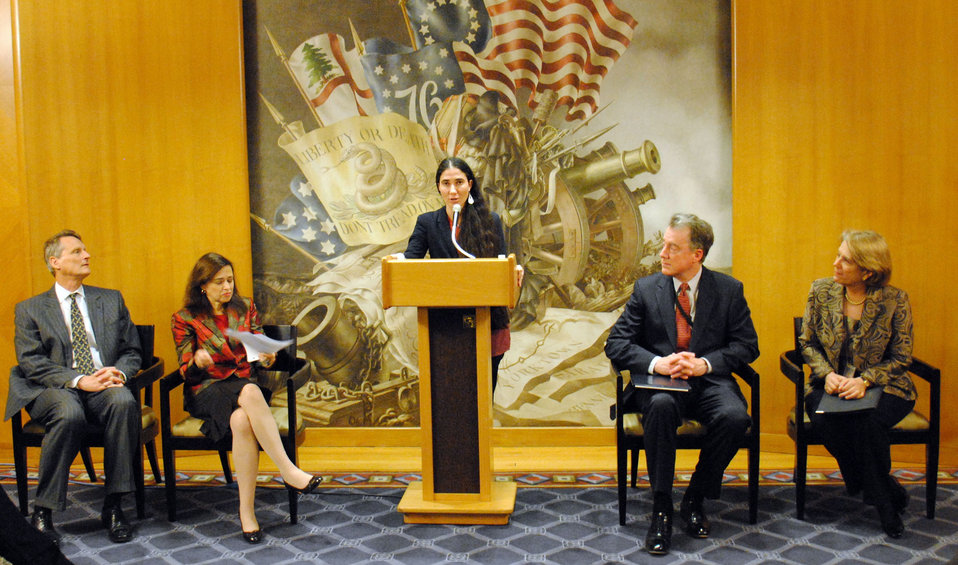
Yoani Sanchez Delivers Remarks

Yoani Sanchez, winner of the 2011 Secretary’s International Women of Courage award, delivers remarks after meeting with Under Secretary for Public Diplomacy and Public Affairs Tara Sonenshine, Acting Ambassador-at-Large for Global Women’s Issues Sharon Wiener, as well as representatives from the Bureau of Western Hemisphere Affairs and the Bureau of Democracy, Human Rights and Labor at the U.S. Department of State in Washington, D.C., on March 20, 2013.